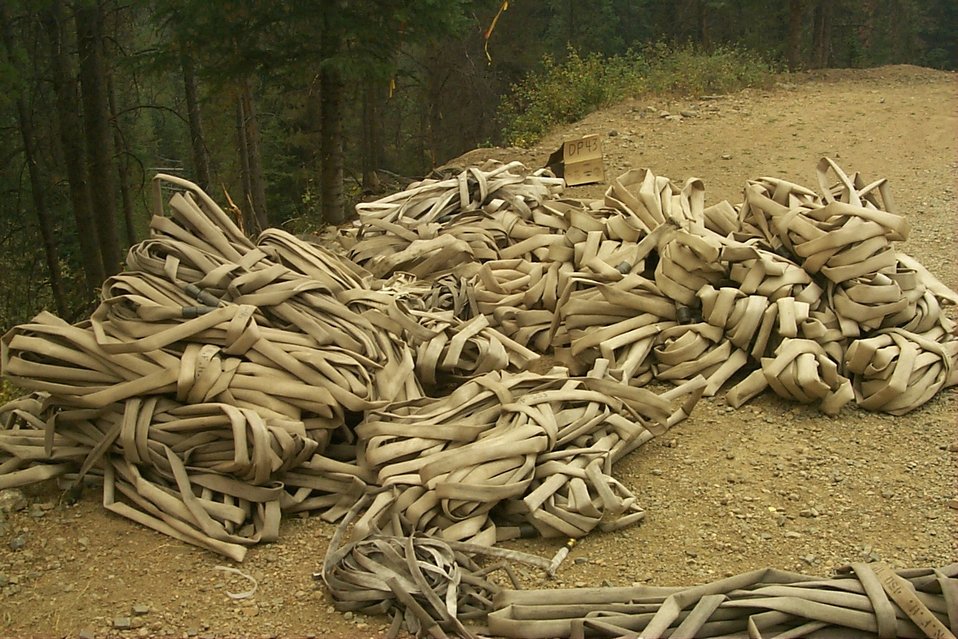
Fire hose Fire Clearwater Fire Salmon Field Office USRD Upper Snake River District